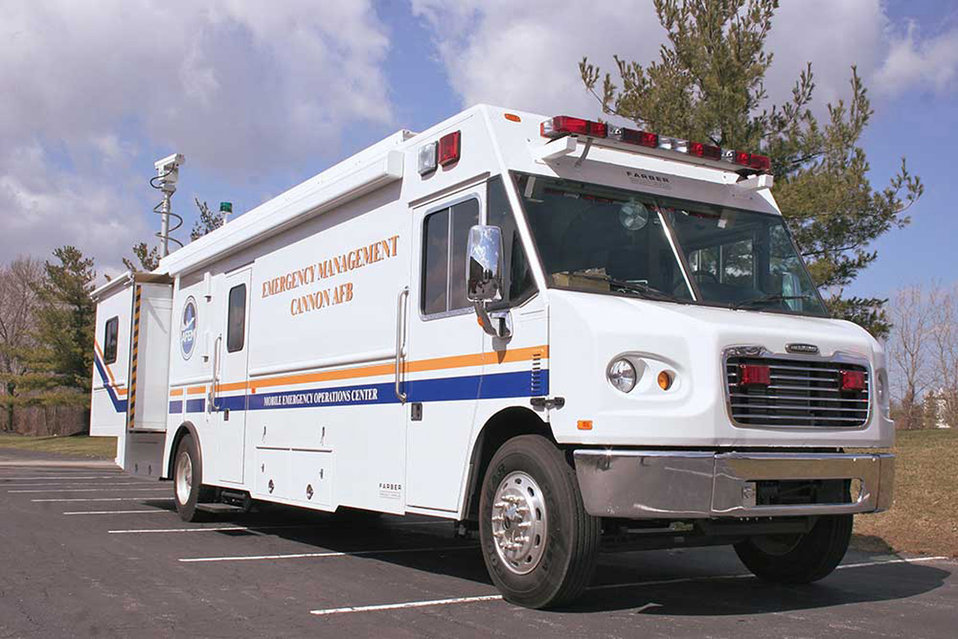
Robin's mobile command center to assist in emergencies

A 39-foot mobile emergency operations center will launch at Robins Air Force Base, Ga., in April.